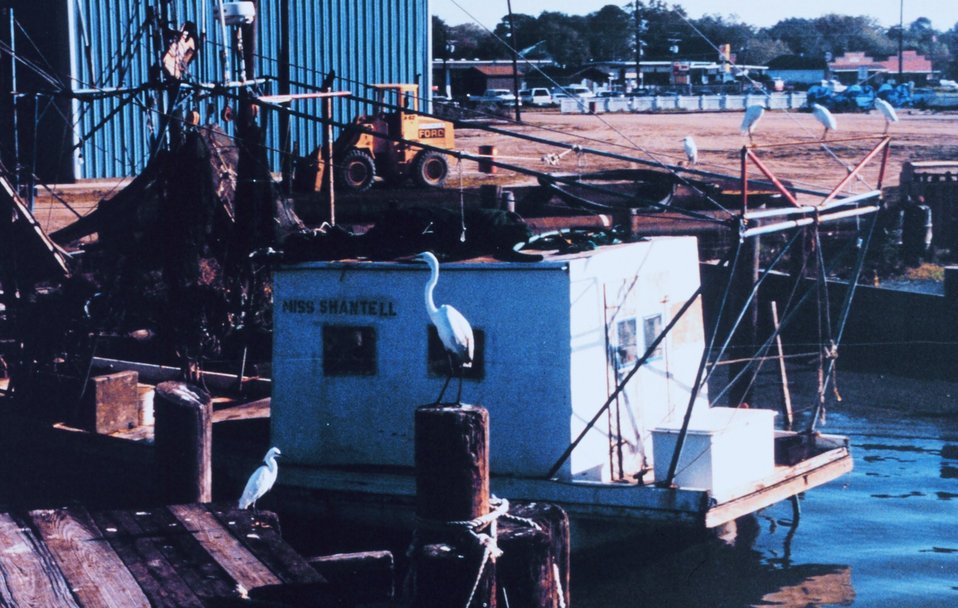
White herons and snowy egrets grace a Cameron pier